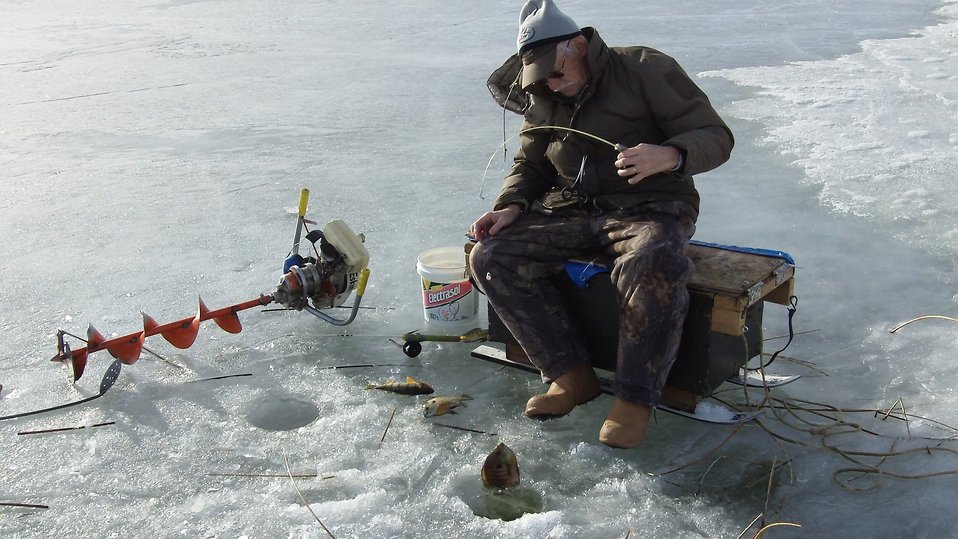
Ice fishing is one of the winter activities to enjoy at Valentine National Wildlife Refuge in Nebraska.